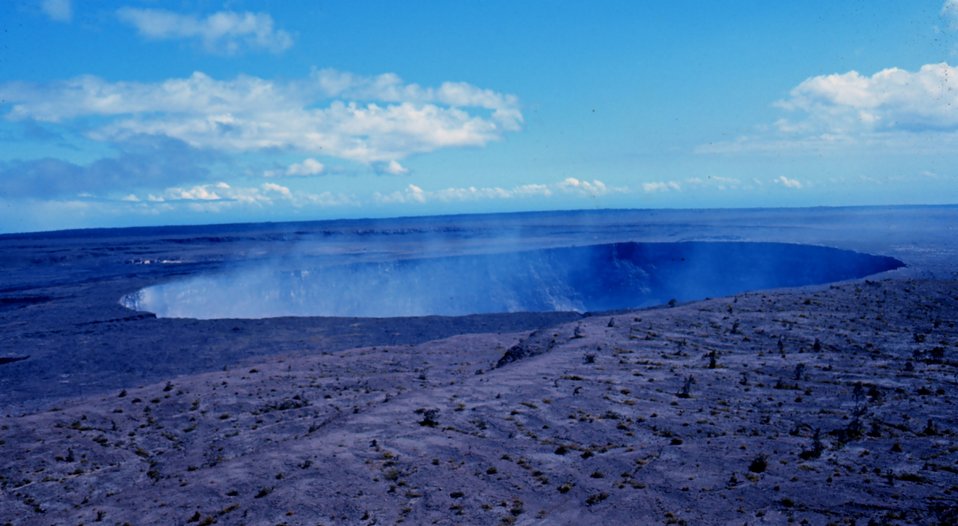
Kilauea Crater at Volcanoes National Park